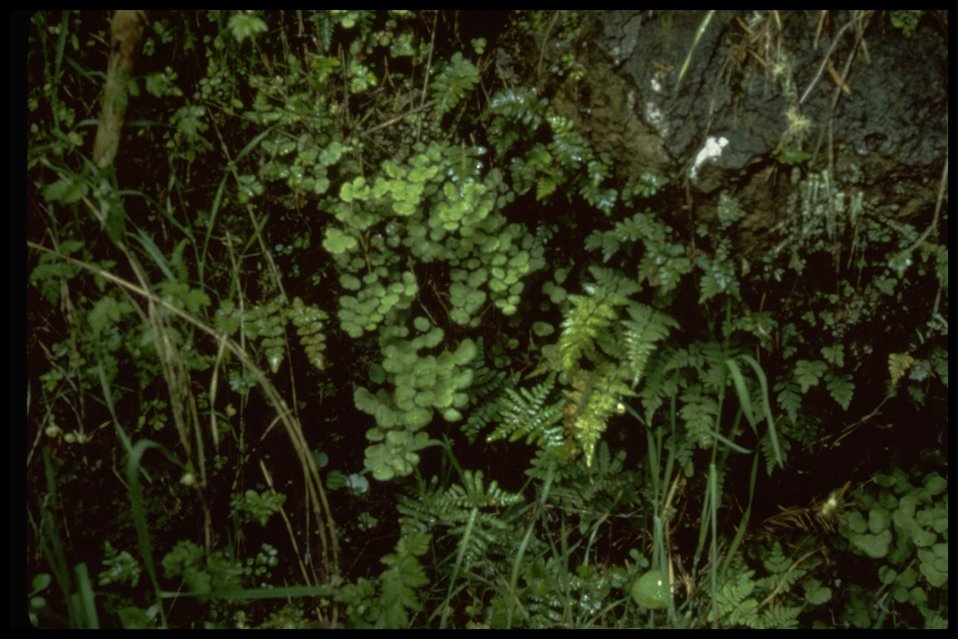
Adiantum jordanii, commonly known as California Maidenhair Fern.